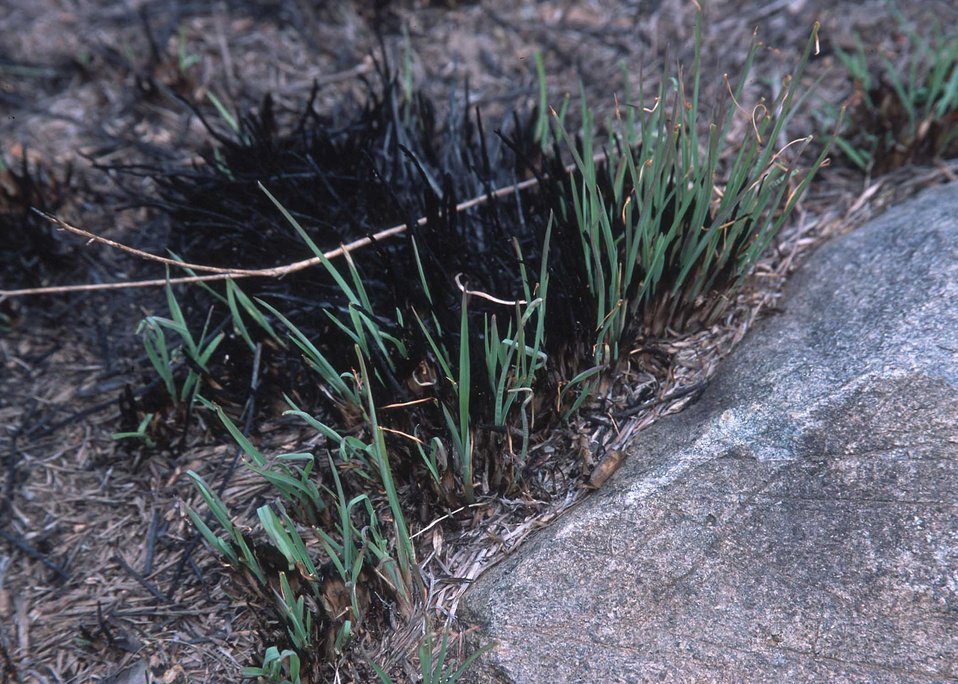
Bluestem germinates after a prescribed burn in the Witchita Mountains National Wildlife Refuge. Okalhoma.